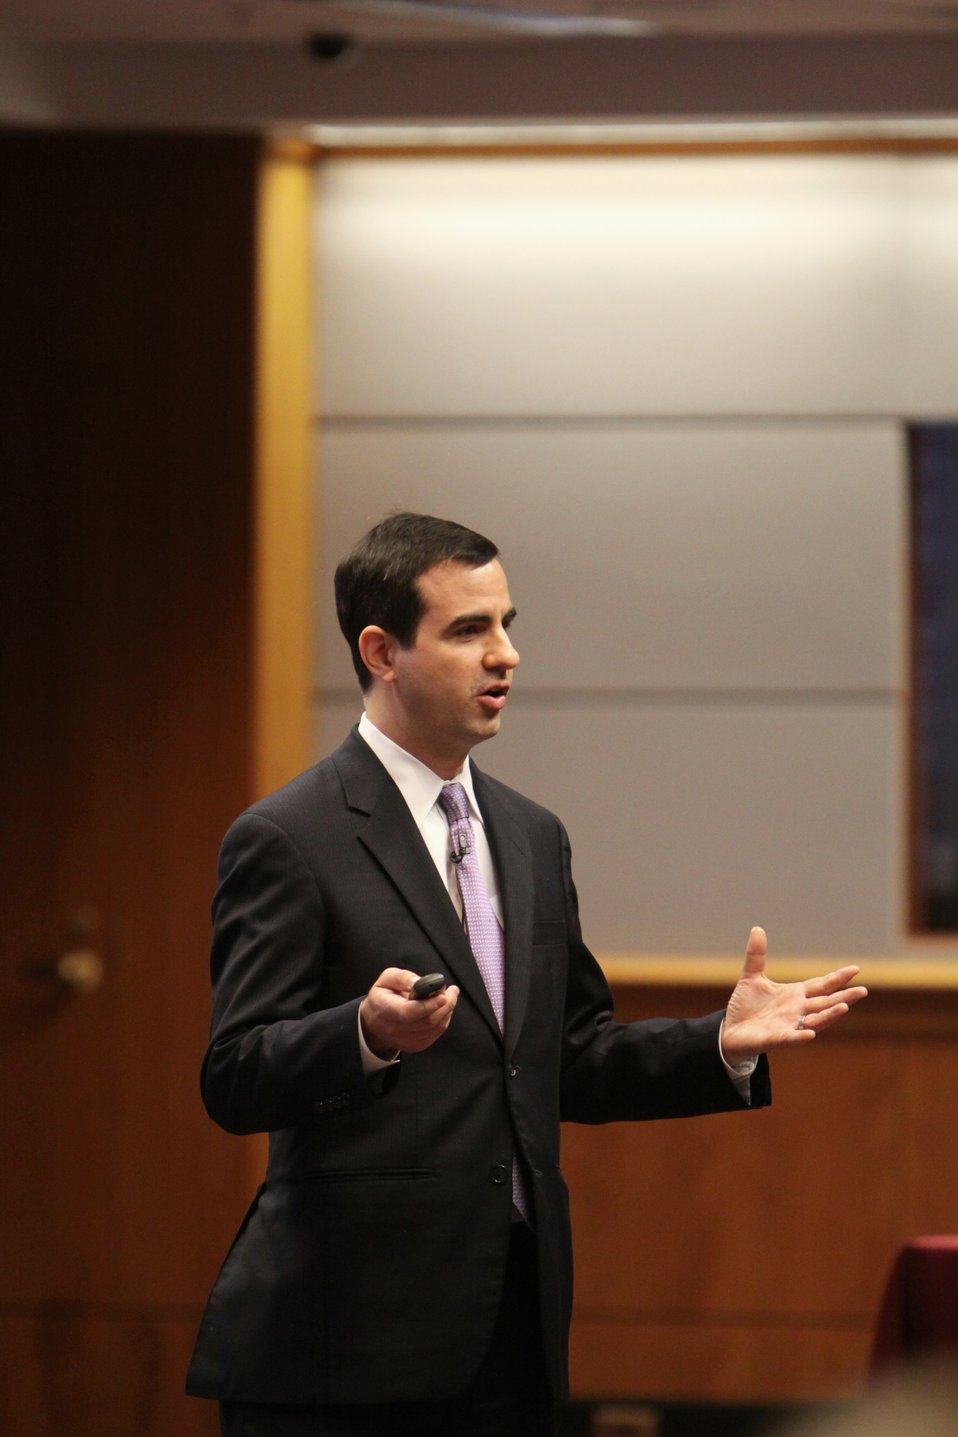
John Leibovitz, Deputy Chief, Wireless Telecommunications Bureau